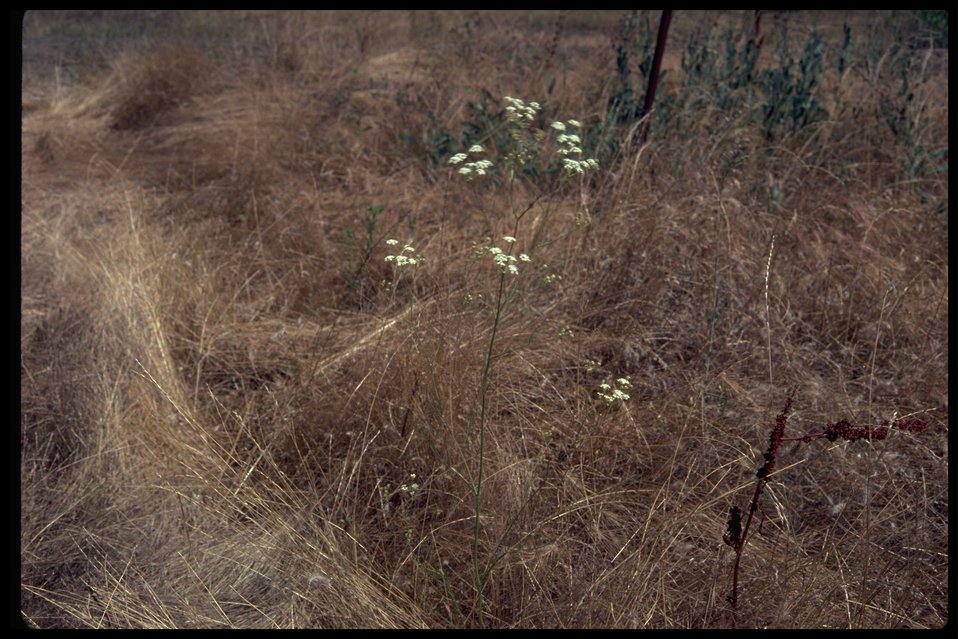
Farshot of red root yampah (Perideridia erythrorhiza).